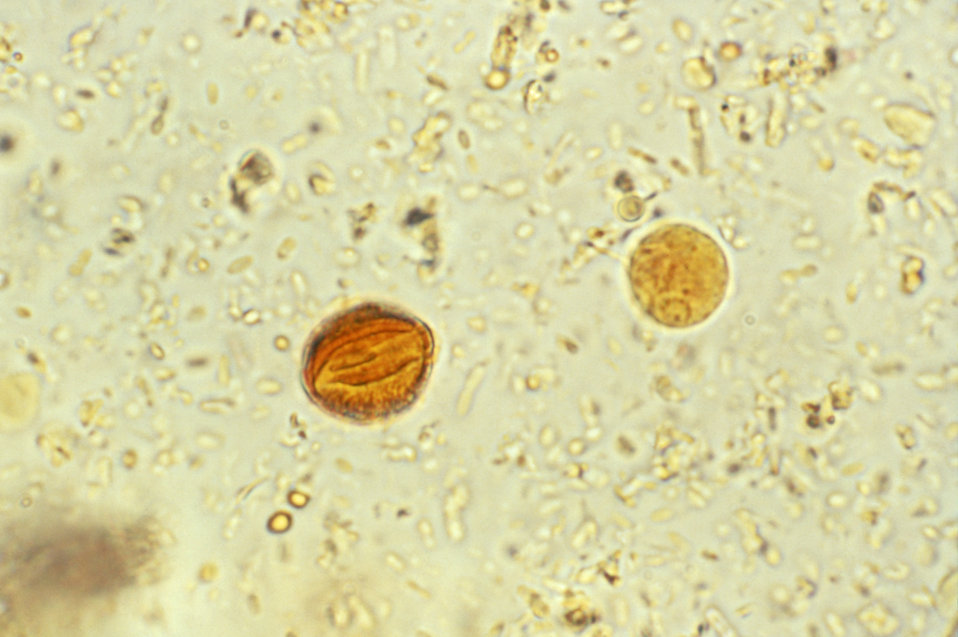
This photomicrograph revealed Entamoeba histolytica cysts that when mature, will display four identifiable nuclei.